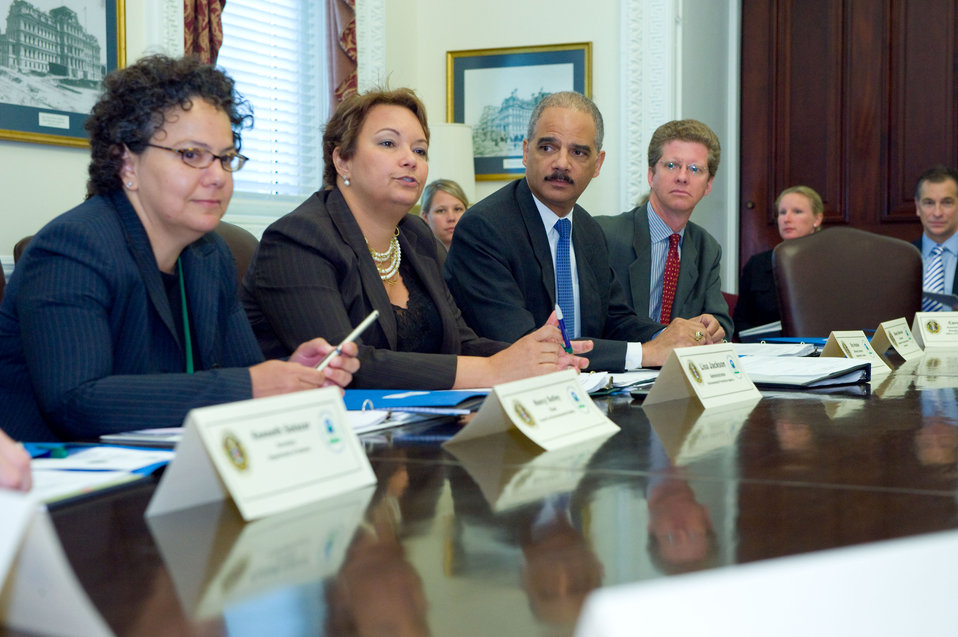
EPA Hosts Historic Meeting on Environmental Justice

Left to Right, Nancy Sutley, Chair, Council on Environmental Quality, Lisa P. Jackson, Administrator, Environmental Protection Agency, Eric Holder, Attorney General, USEPA Shaun Donavan, Secretary, Department of Housing and Urban Development.

Read more about this historic meeting

Learn more about EPA